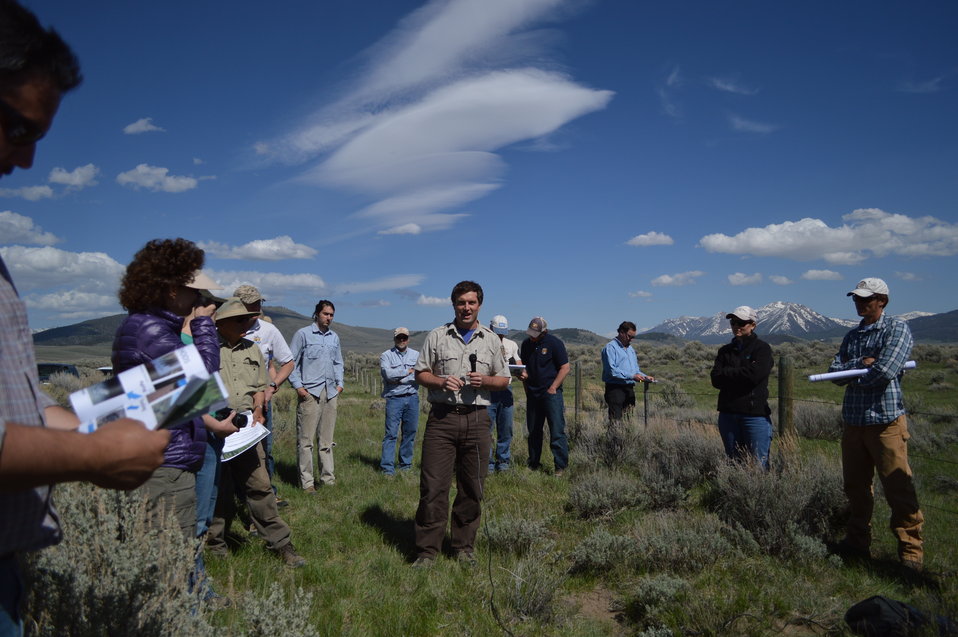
Regional Leadership Visit to Montana 2014